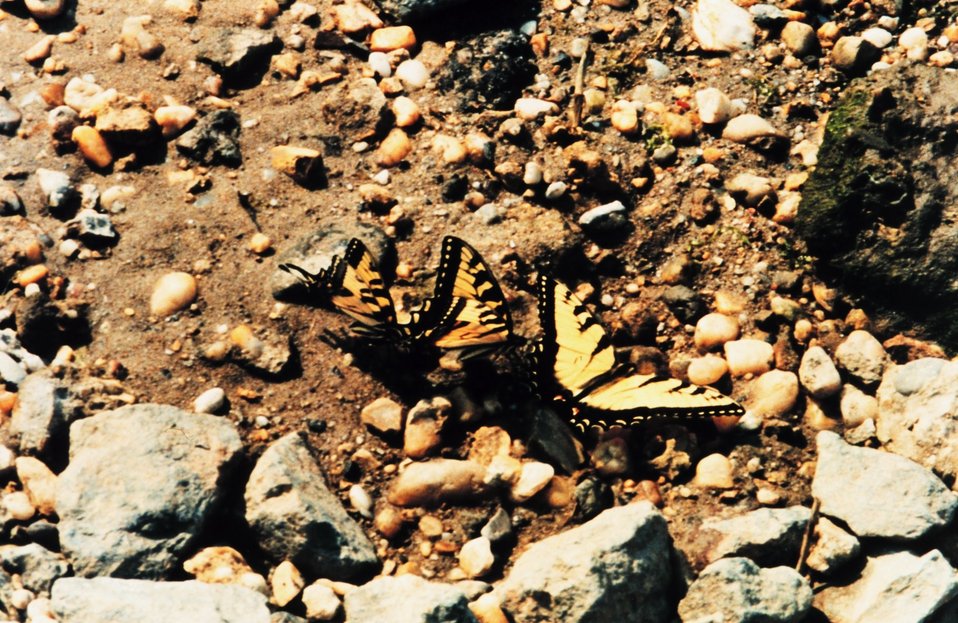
Swallow-tail butterflies on a pebbled beach.